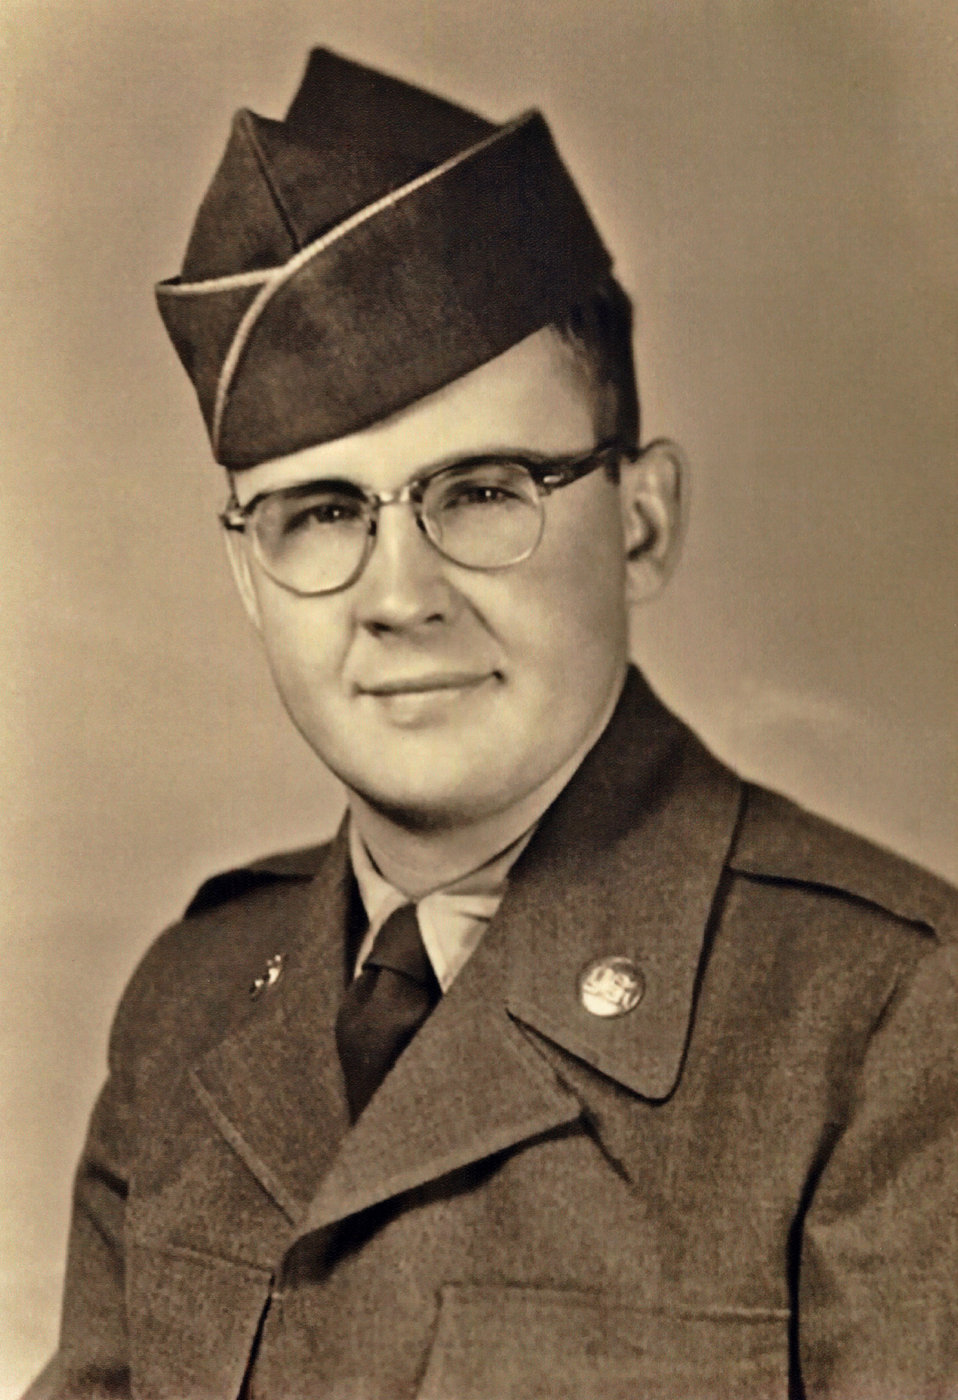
This 1953 photograph depicted Dr. William 'Bill' Collins, a research biologist with the National Center for Infectious Diseases (NCID), Division of Parasitic Diseases (DPD).